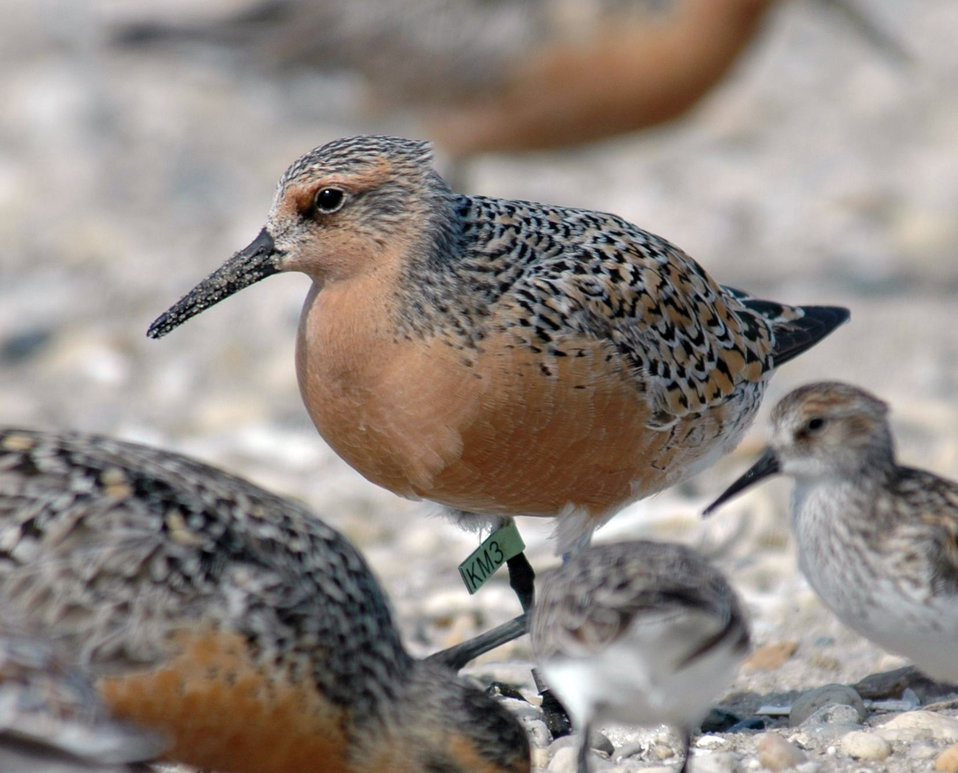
Tagged Red Knot

Mispillion Harbor, Delaware.